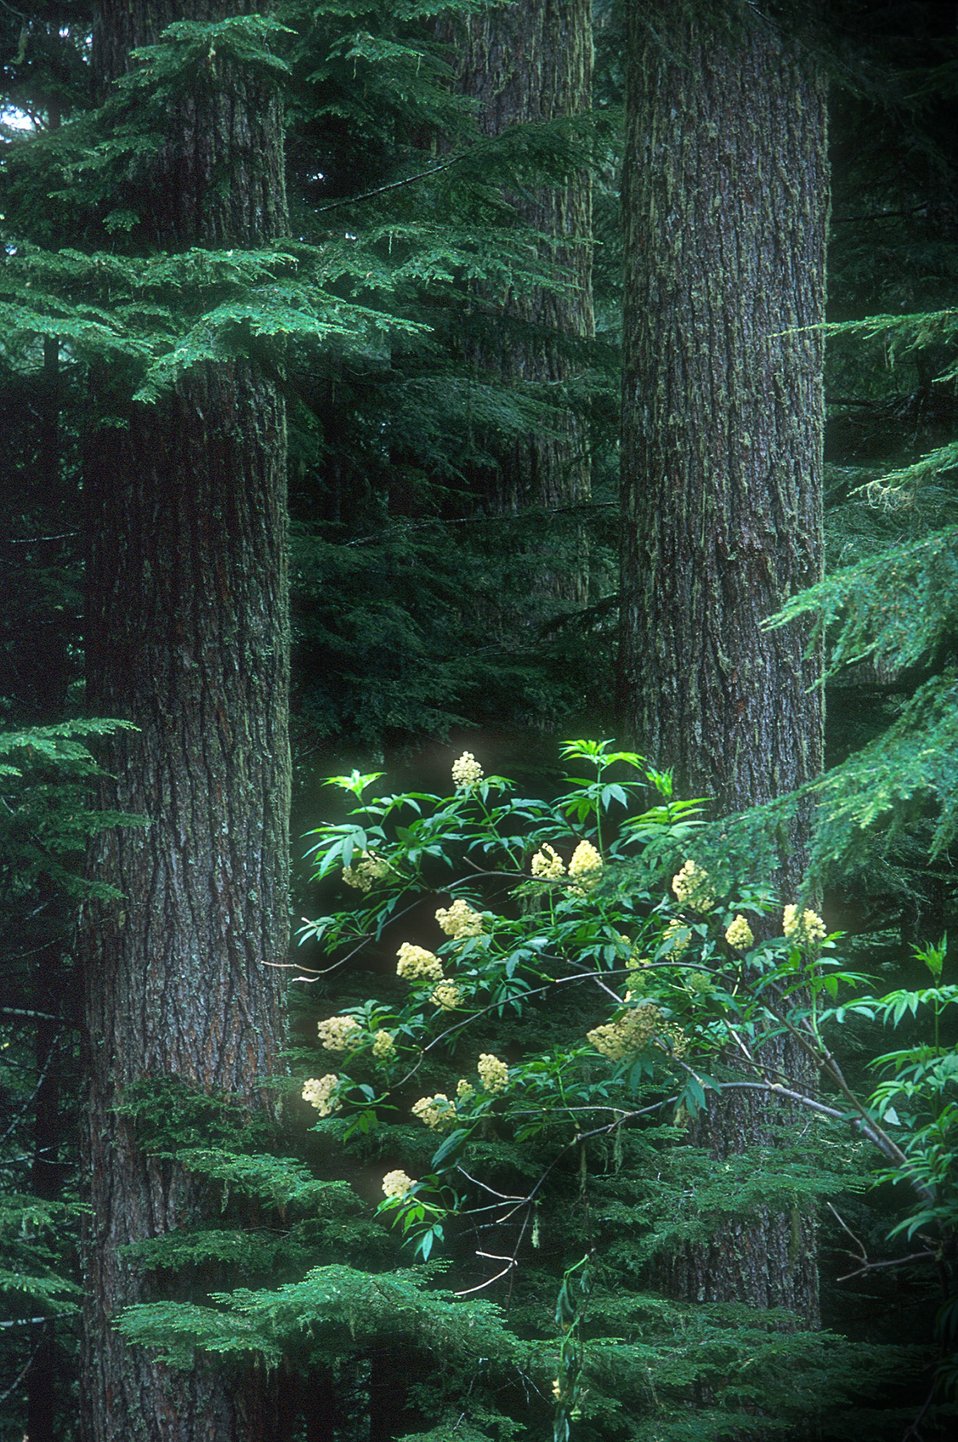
Coos Bay rhodedendron in Old growth. Middle fork, Brummett Creek Road.